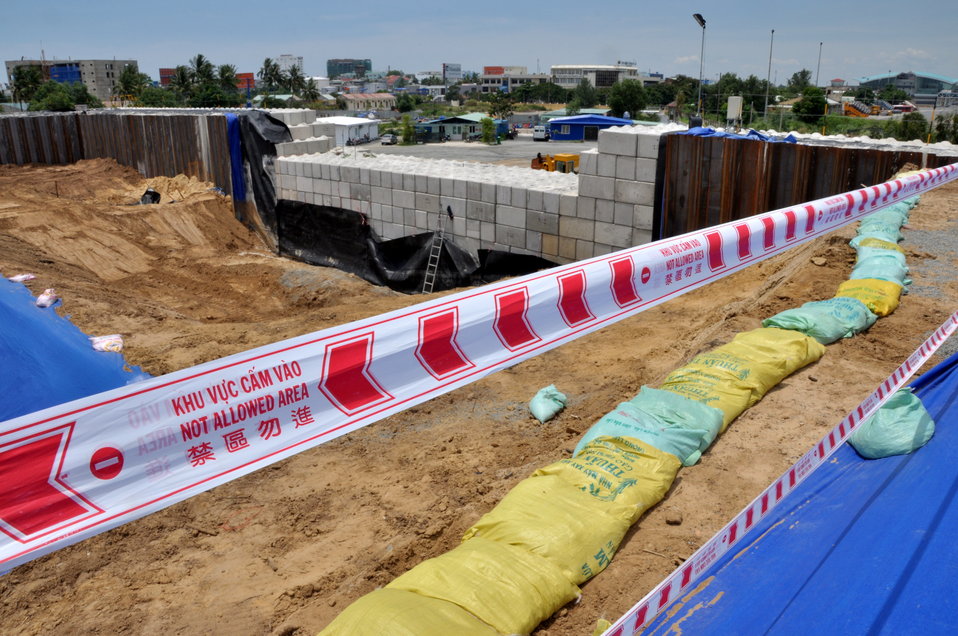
USAID Dioxin Contamination Project Progress: Containment Structure

Progress at the Environmental Remediation of Dioxin Contamination Project at Danang Airport

July 16, 2013